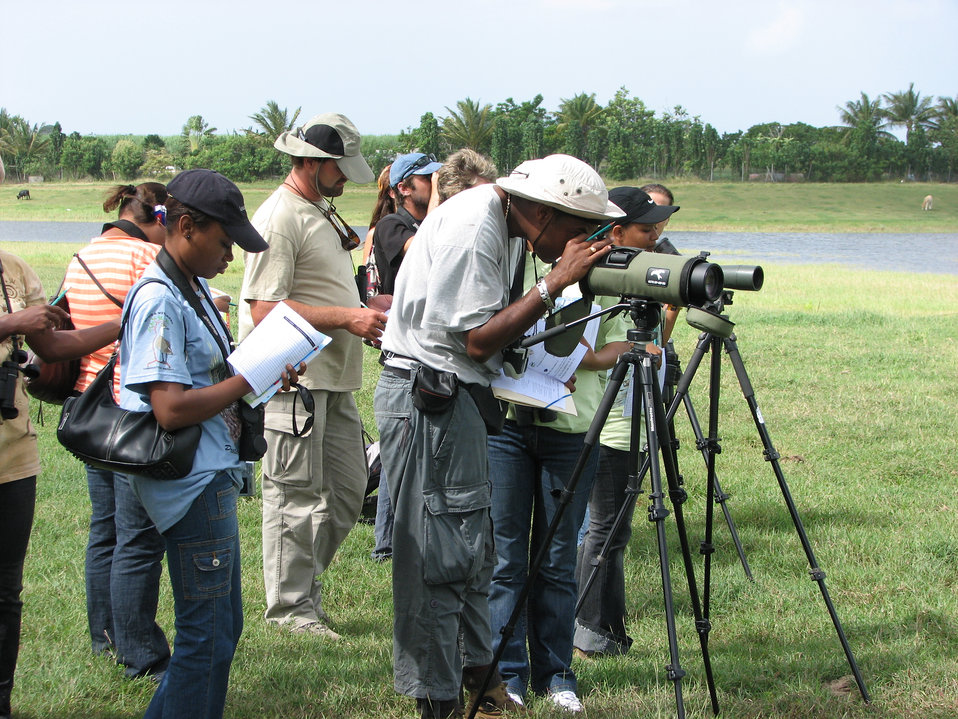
Birding at Gachette Reservoir - 10

CB trainees go birding.